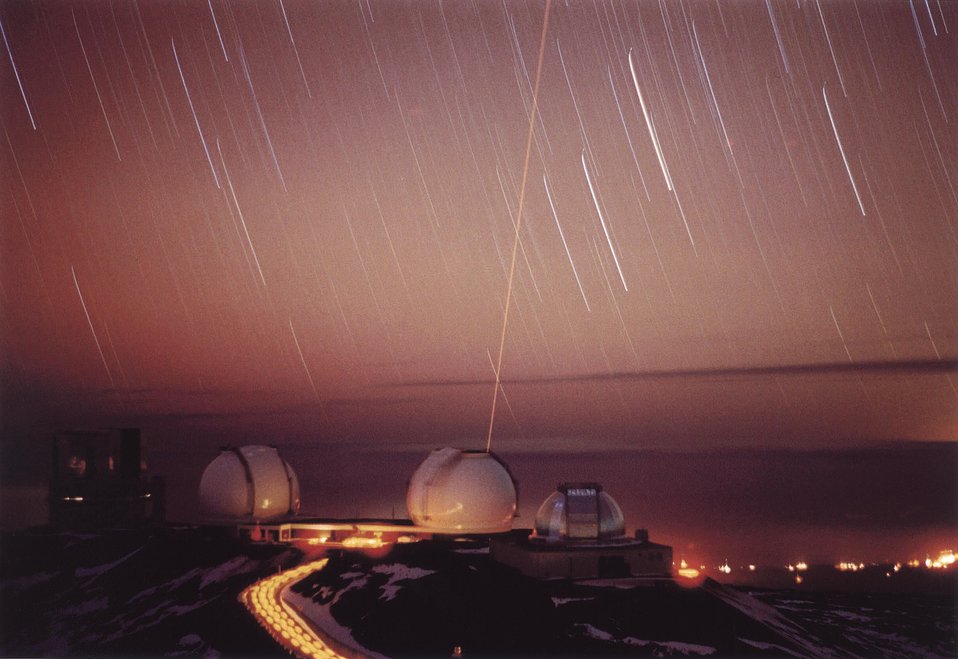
KECK II TELESCOPE ATOP 14,000 FOOT MAUNA KEA VOLCANO IN HAWAII.

A LASER GUIDE STAR ADAPTIVE OPTICS SYSTEM BEING DEVELOPED FOR THE 10-METER KECK II TELESCOPE IS A COLLABORATION BETWEEN LLNL AND THE KECK OBSERVATORY. THIS 20 MINUTE TIME EXPOSURE OF THE KECK VIRTUAL GUIDE STAR, SHOWS THE ORANGE LASER BEAM EMERGING FROM THE DOME OF THE TELESCOPE AND THE MOTION OF THE STARS MADE 'TRAILS' OR STREAKS IN THE SKY. THIS OPTICS SYSTEM IS THE LARGEST CURRENTLY BEING DEVELOPED FOR AN ASTRONOMICAL TELESCOPE.